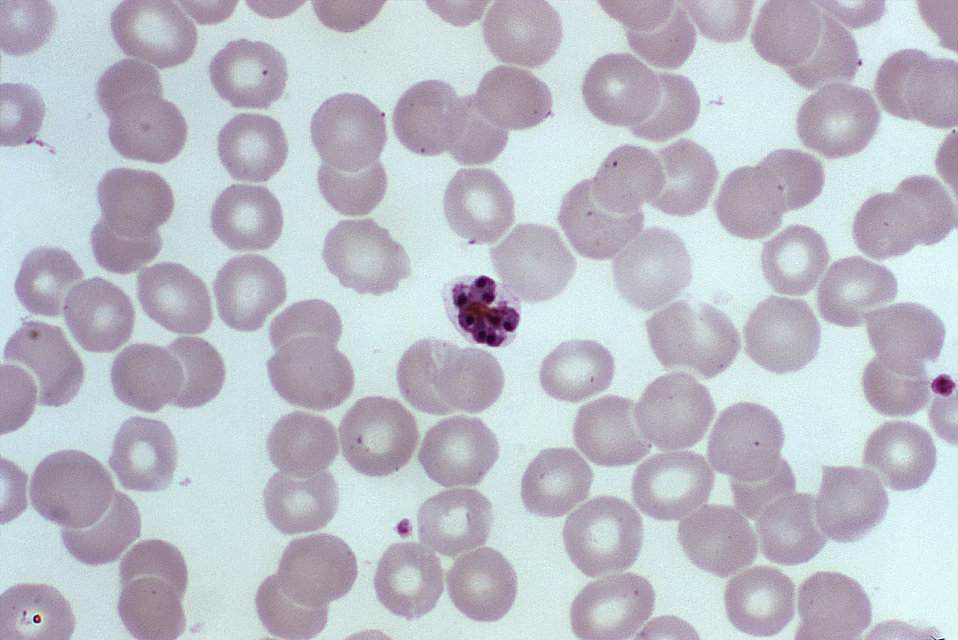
This photomicrograph shows a mature Plasmodium malariae schizont within an infected RBC.